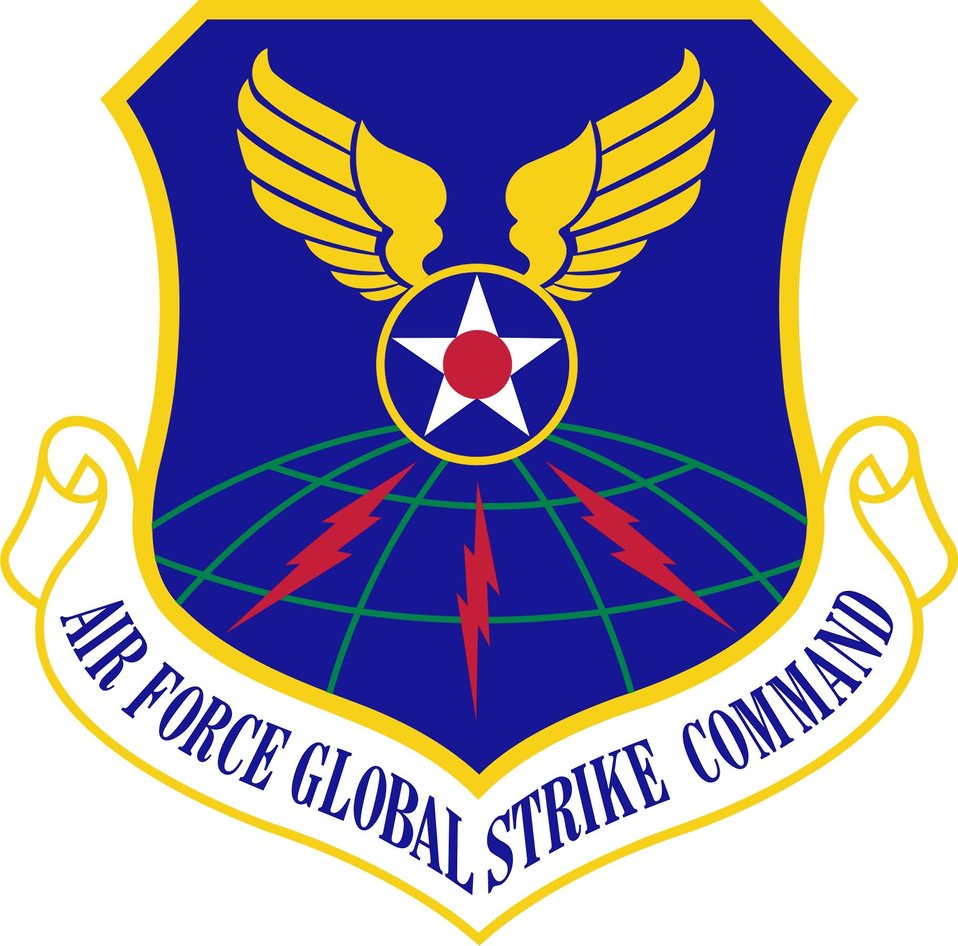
AFGSC

Air Force Chief of Staff Gen. Norton Schwartz and Chief Master Sgt of the Air Force James Roy visited Global Strike Command Airmen during Christmas.